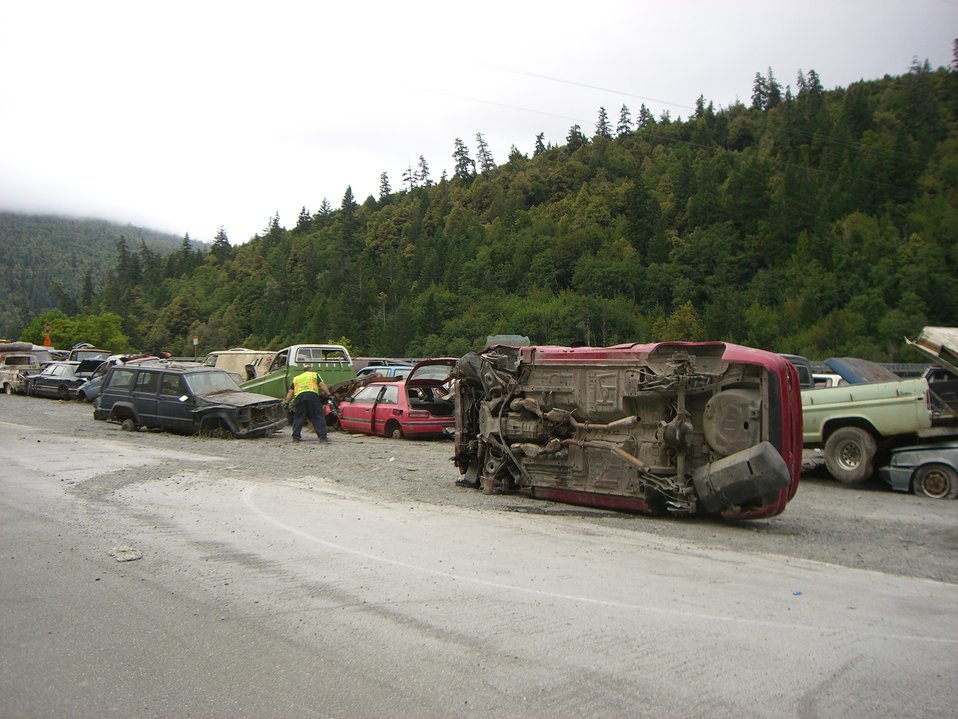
Yurok vehicle collection site

In June 2009, the Yurok Tribe, together with the Karuk and Hoopa Tribe, removed 400 vehicles illegally dumped or collected for repair on their lands.